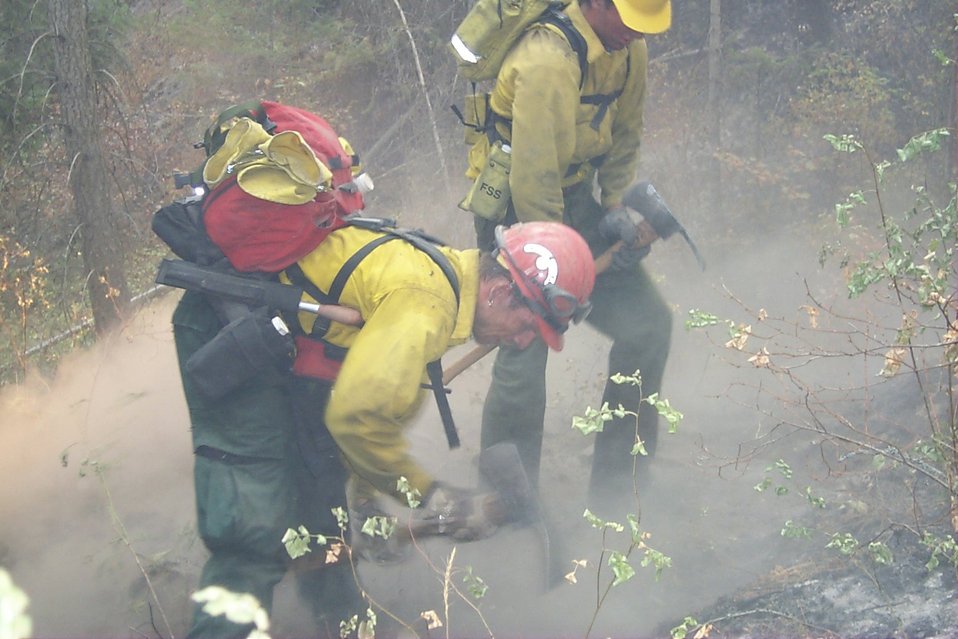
Line crew Fire Clearwater Fire Salmon Field Office USRD Upper Snake River District